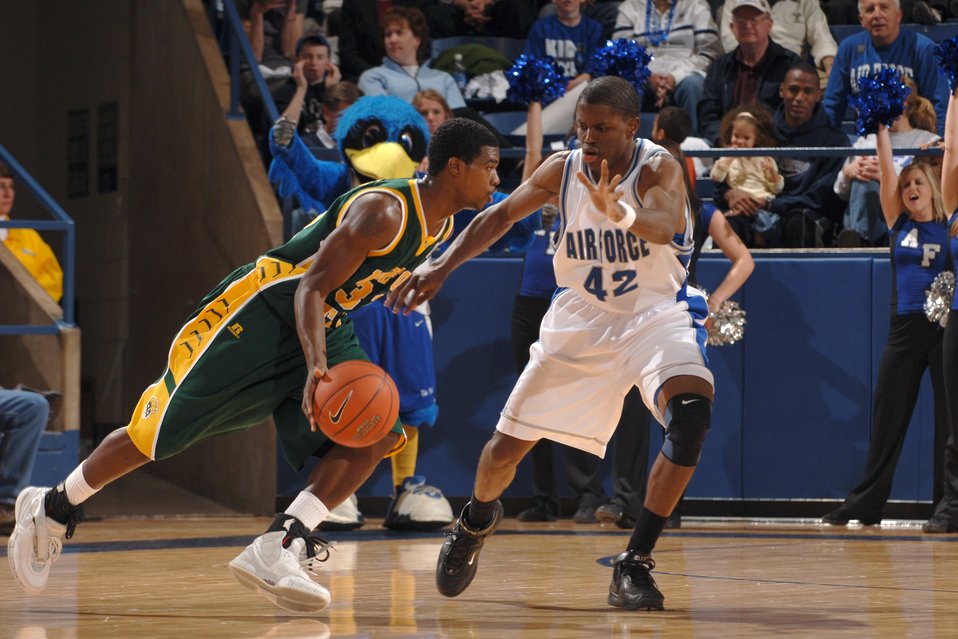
Falcons battle Colorado

Falcon forward Anwar Johnson defends against Norfolk State's Brandon Plummer Dec. 13 at Clune Arena. The Falcons defense held the Spartans to just 36 percent shooting for a 70-47 victory.